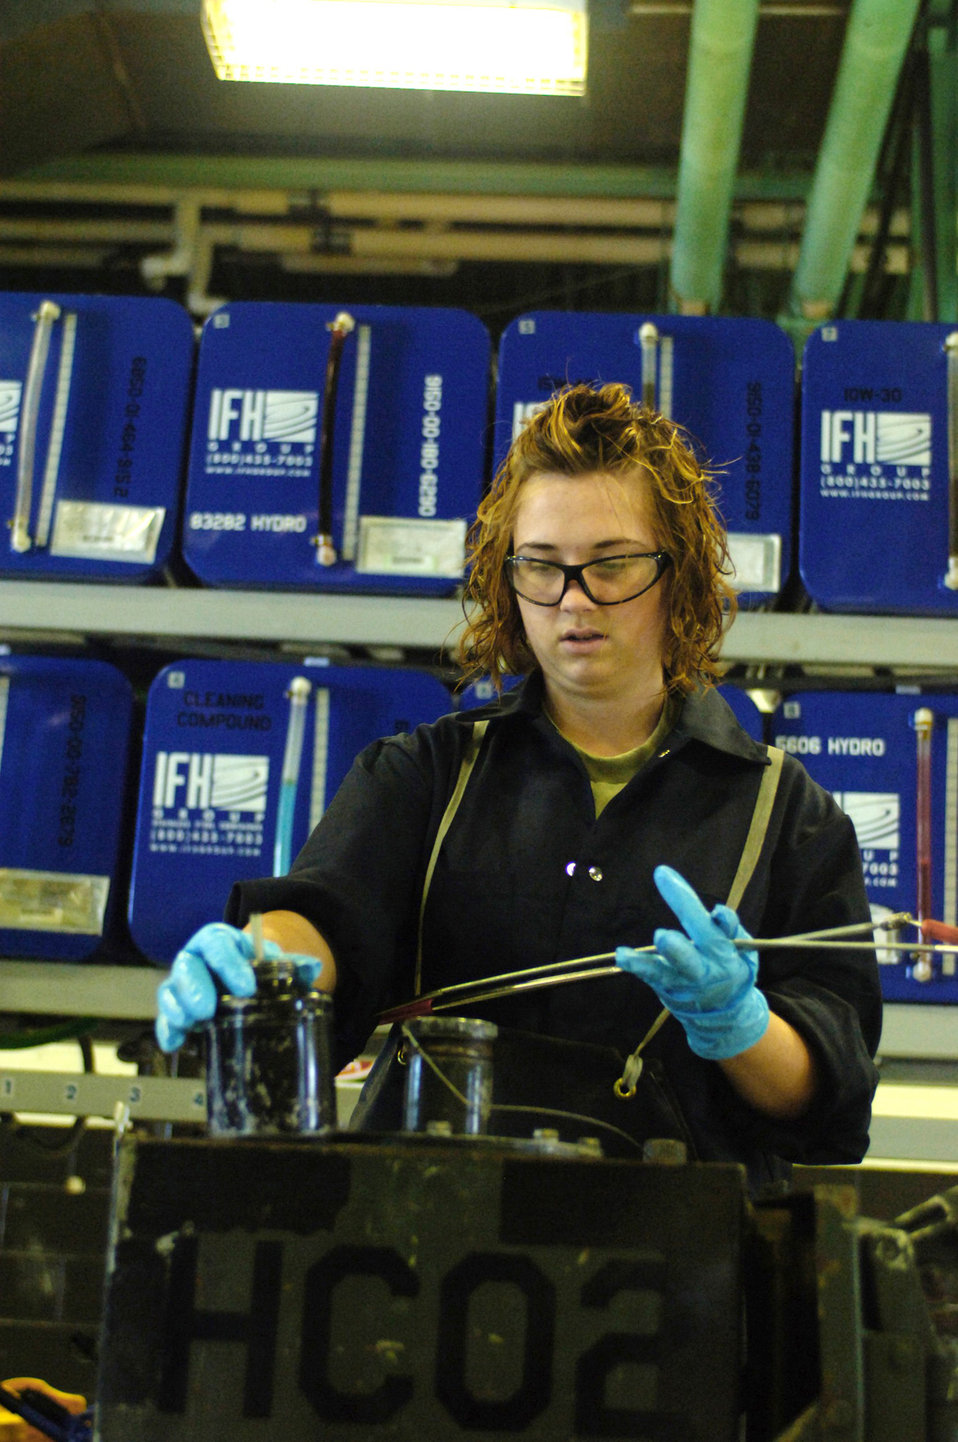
Minot Airmen use AFSO 21 to save $1 million annually

Airman 1st Class Jodi Ebnit checks the oil level on a dash 95 large air start system July 27 at Minot Air Force Base, N.D. The 5th Maintenance Squadron Aerospace Ground Equipment Flight recently initiated an Air Force Smart Operations for the 21st century process to increase the unit's efficiency to meet the base's mission. Airman Ebnit is an AGE technician.